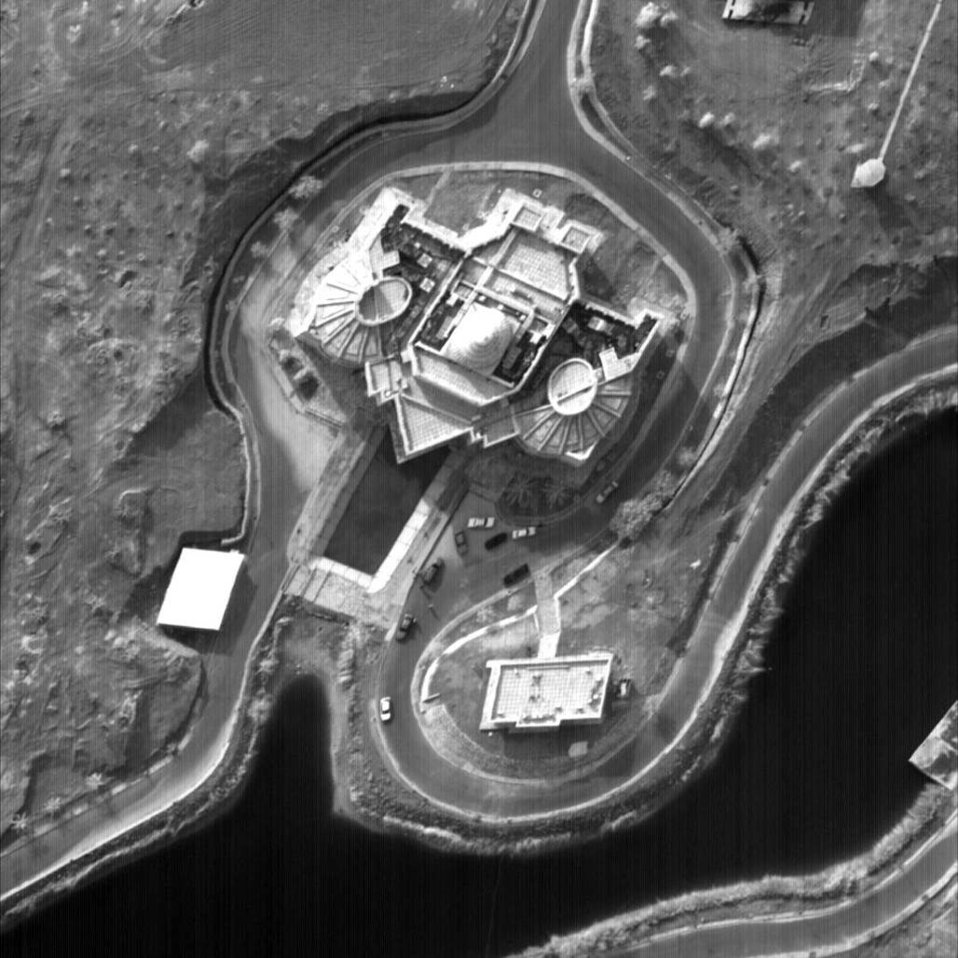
Tactical recon paying dividends with TARS

TARS imagery of one of Saddam Hussein's palaces.